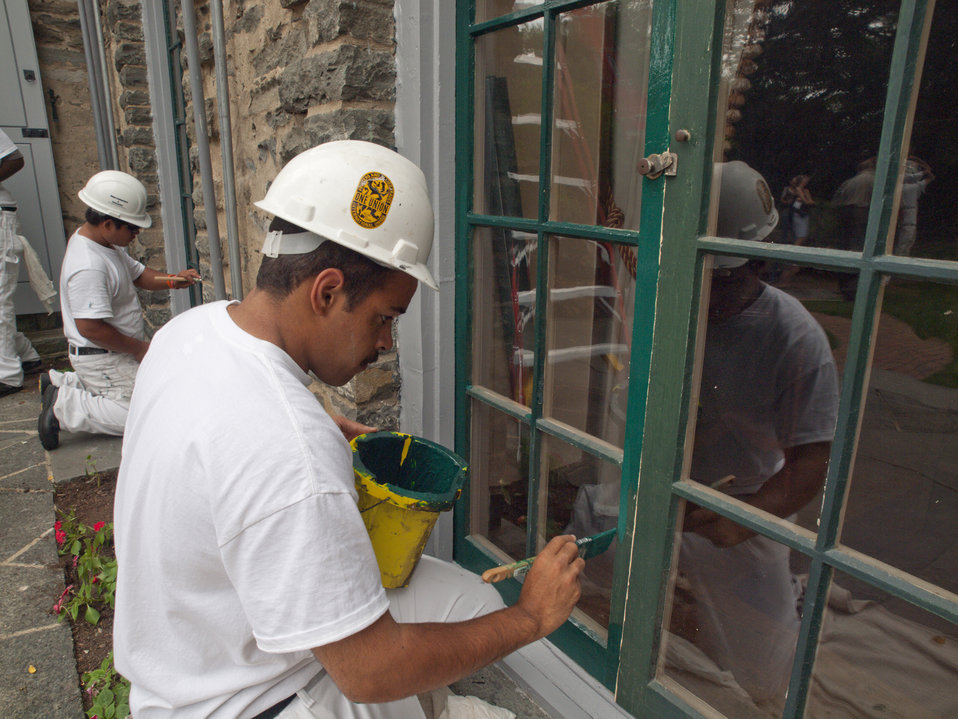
Job Corps students help to restore Grey Towers National Historic Site. $2,440,000 in Recovery Act funds were allocated to repair and refurbish the house and grounds of the ancestral home of the first Chief of the Forest Service and two-term Pennsylvania governor Gifford Pinchot on Tuesday August 3, 2010 in Milford, PA. This project at the 123-year-old site repairs various deficiencies with the buildings and grounds, restores areas of the historic landscape, improves visitor safety and site security, provides a more sustainable facility, and enhances the visitor experience. It helps to ensure the historic site is maintained for years to come.